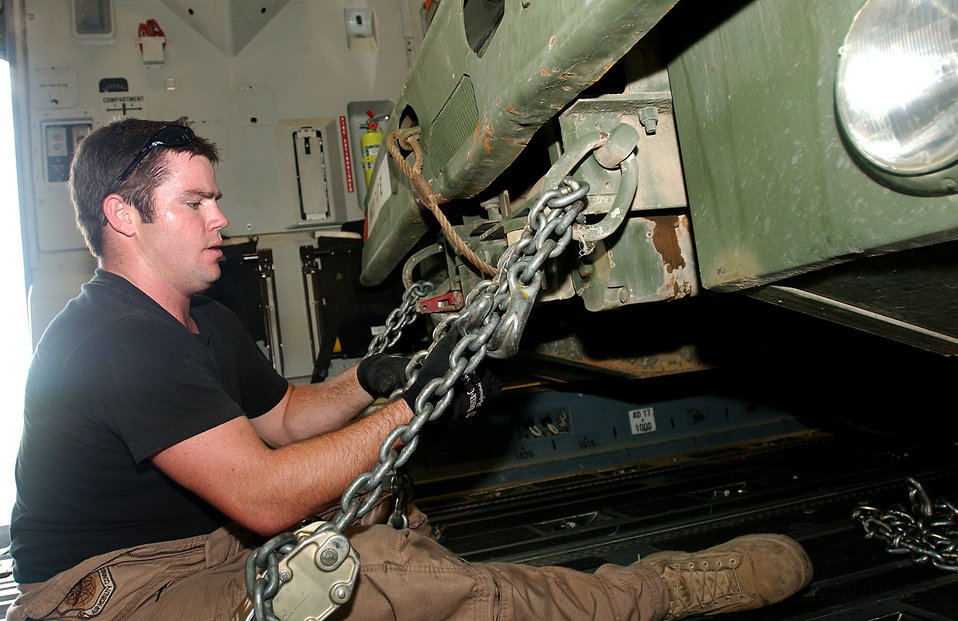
Chained rig

CAMP LEMONIER, Djibouti (AFPN) -- Senior Airman Jake Wyatt connects chains to a well rig inside a C-17 Globemaster III. The Airman is one of many Airmen supporting the Army's operations in the Horn of Africa. Airman Wyatt is a loadmaster from the 14th Airlift Squadron at Charleston Air Force Base, S.C.